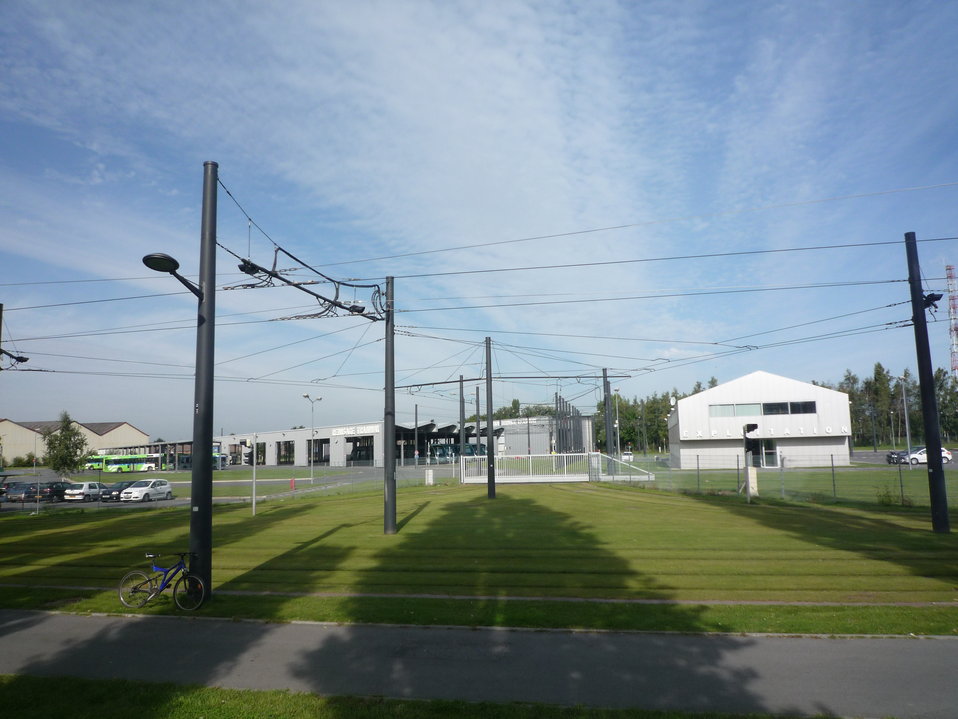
Fran√ßais†: Tramway de Valenciennes, Nord, Nord-Pas-de-Calais, France